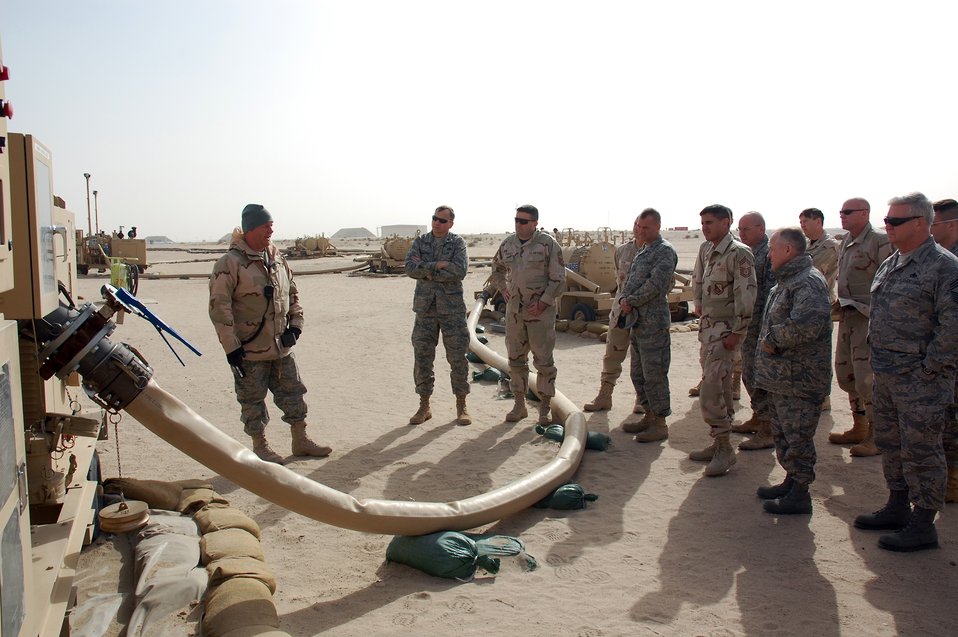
Leaders ensure wartime logistics, maintenance success

Tech. Sgt. Dennis Wallace briefs logistics and maintenance senior leaders about the R-18 fuel pump used to refuel aircraft Feb. 3. The senior leaders attended the Central Command Air Forces Expeditionary Maintenance Group Conference. Sergeant Wallace is deployed to the 386th Expeditionary Logistics Readiness Squadron.